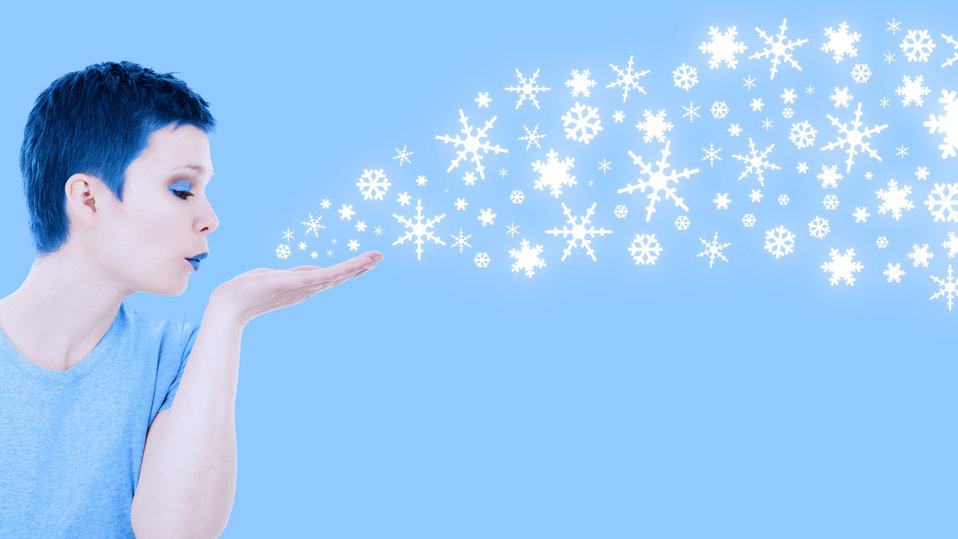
Winter girl blowing snow.